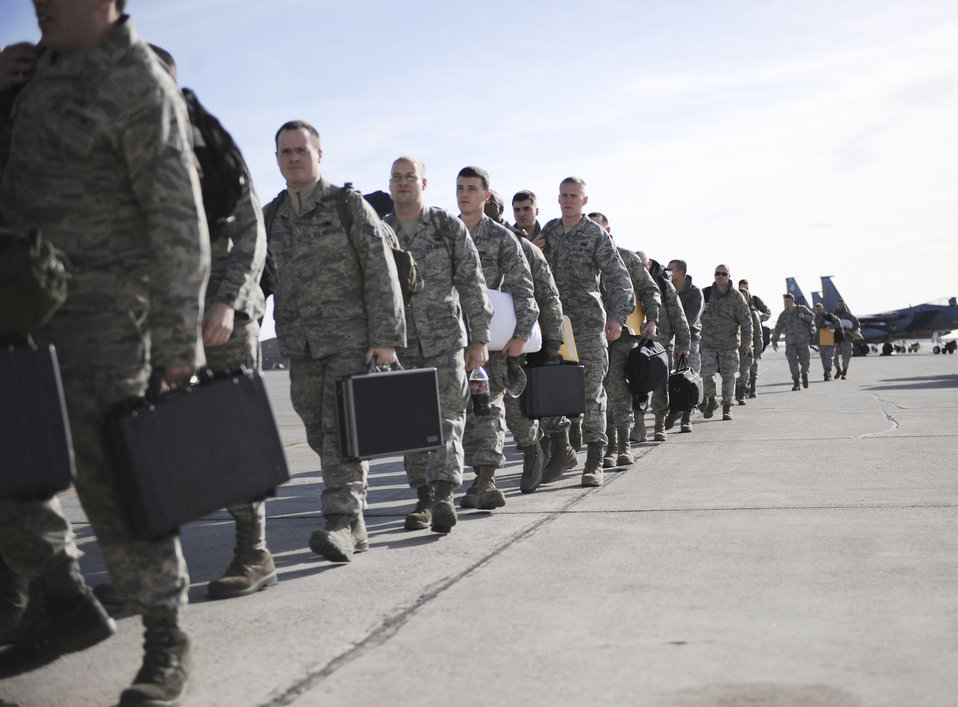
Squadron goes to South Korea

About 300 Airmen with the 391st Fighter Squadron wait to board the commercial transport aircraft for deployment to South Korea, Jan. 18, 2010, at Mountain Home Air Force Base, Idaho. The deployed Airmen will work alongside alliance partners to maintain peace and stability in the region.